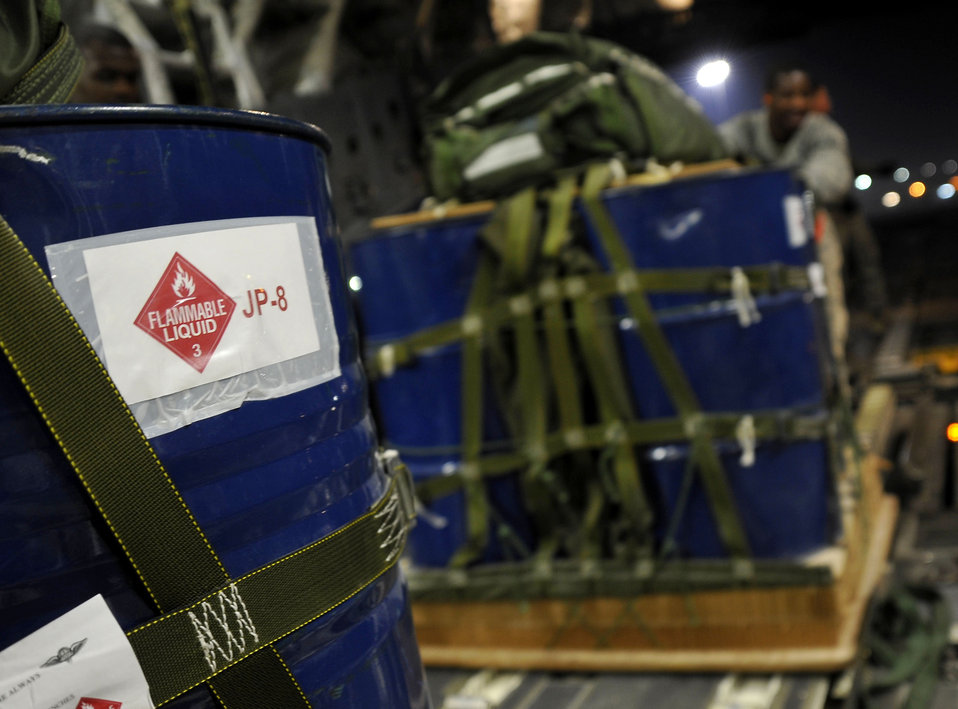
Airmen, Soldiers airdrop supplies to Afghanistan

Staff Sgt. Chester Moore, 8th Expeditionary Aircraft Maintenance Squadron ramp service supervisor, loads a C-17 Globemaster III with fuel Jan. 9, 2010, in Southwest Asia. The bundles of fuel will be air dropped along with food and water to U.S. forces in Afghanistan.